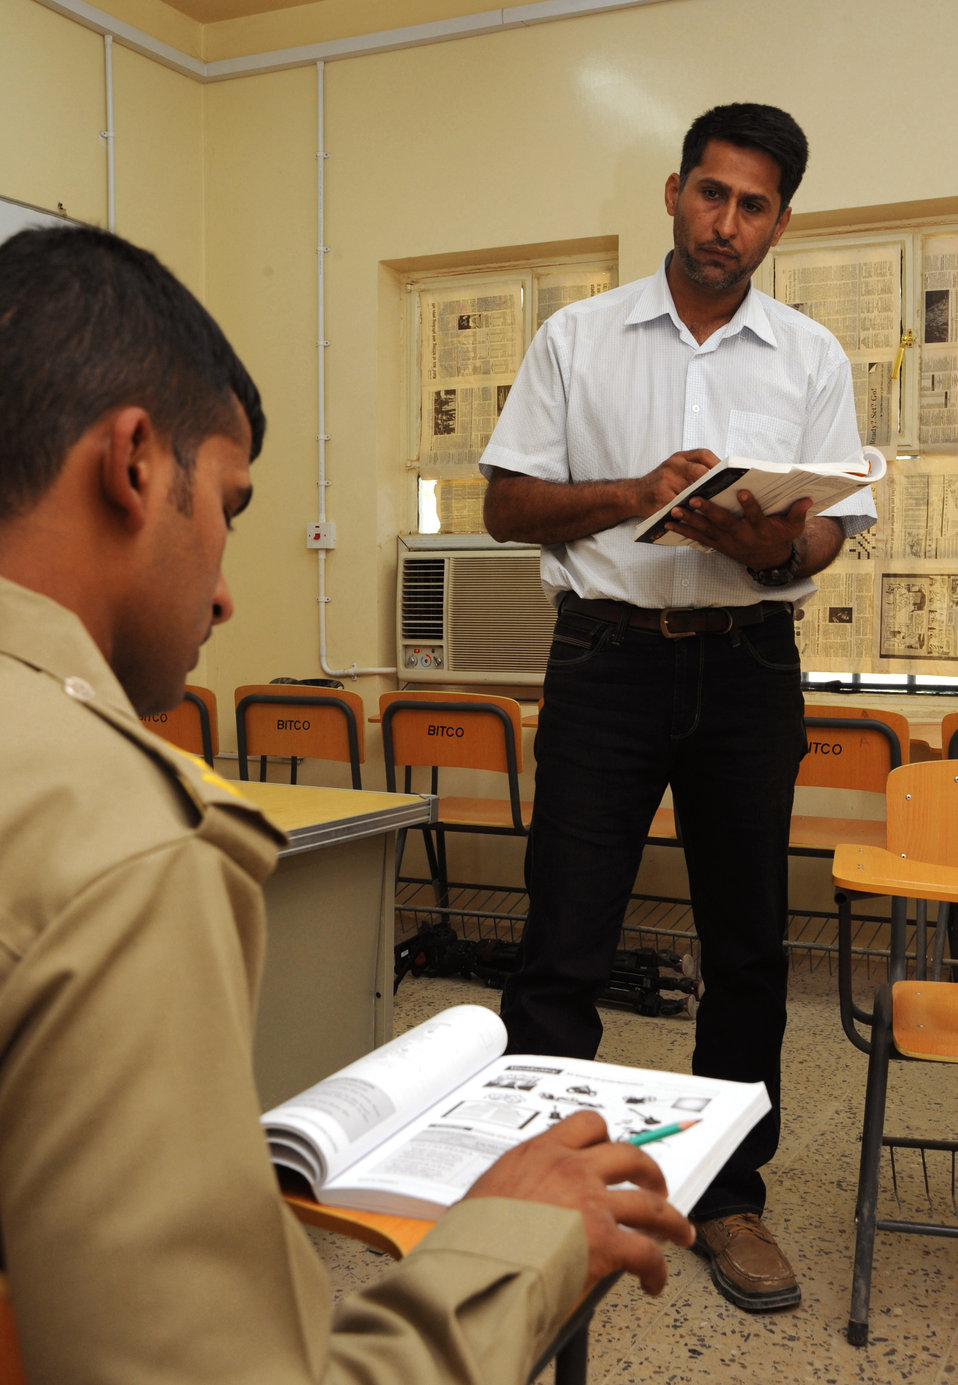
Airmen help future Iraqi pilots learn to speak English

Emad teaches English to Iraqi air force officers Oct. 3, 2009, at Camp Taji, Iraq. Learning English is one of the Iraqi air force's core values, and students must successfully complete the course before moving on to pilot training. Emad is an Iraqi instructor with the 821st Expeditionary Training Squadron. U.S. Air Force instructors assigned to the 821st ETS facilitate the courses and serve as advisers to their Iraqi counterparts.